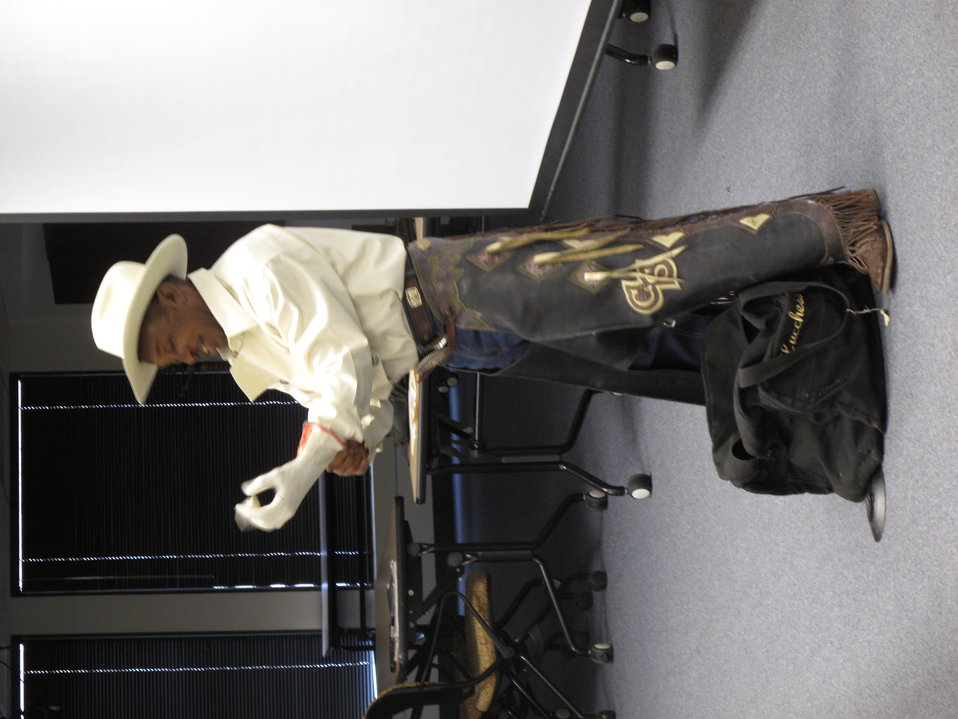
Charles Sampson with his chaps and riding glove

Charles Sampson puts on his chaps and riding glove as he 'prepares' for a bull ride.